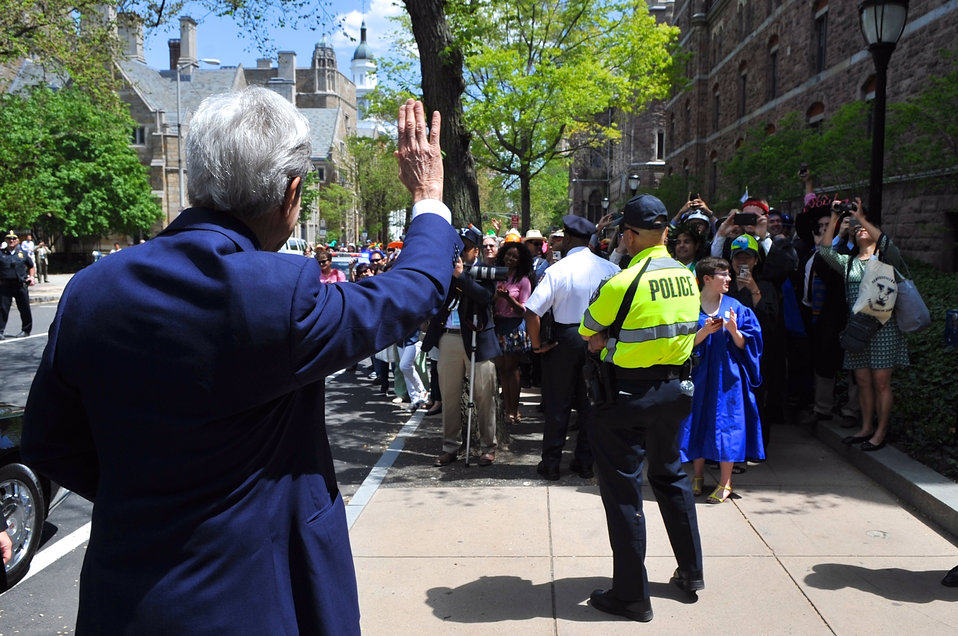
Secretary Kerry Waves to Yale University Students at Class Day

U.S. Secretary of State John Kerry, a Yale University Class of 1966 graduate, waves to students as he arrives on the campus in New Haven, Connecticut, to deliver Class Day remarks on May 18, 2014.